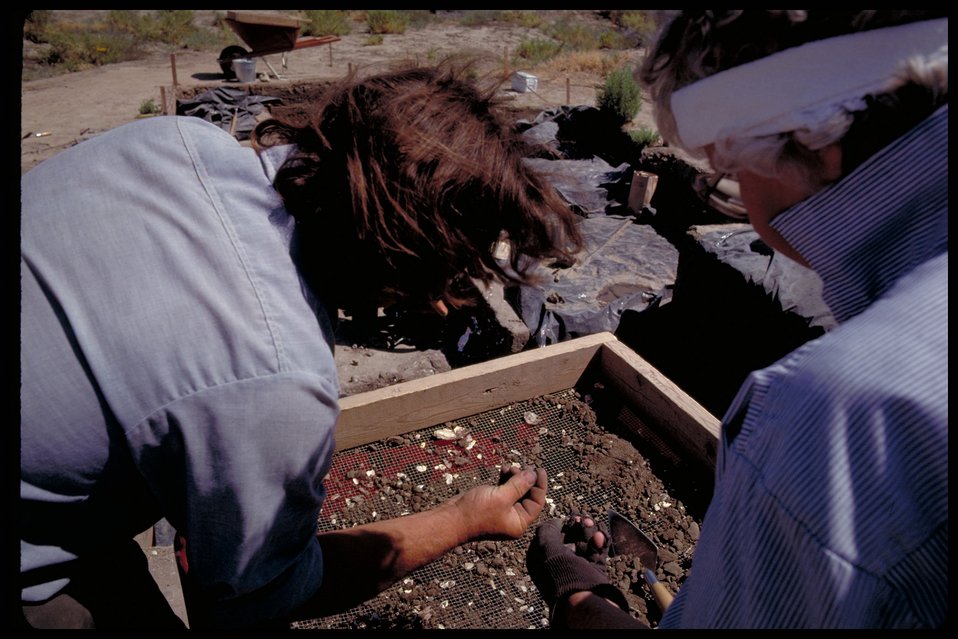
Archeological Dig LSRD